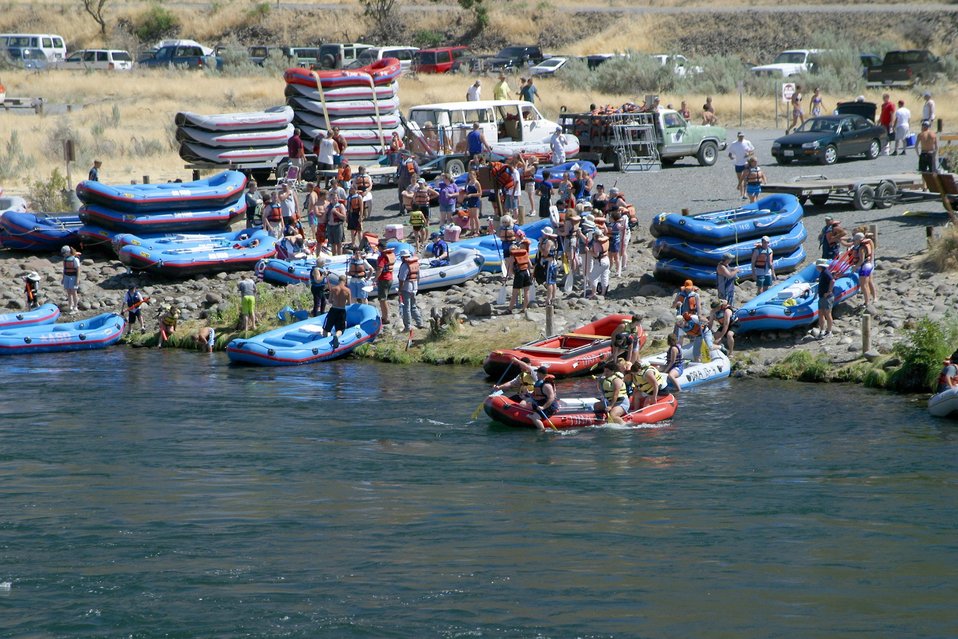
Over 200,000 people a year float the Lower Deshutes River.